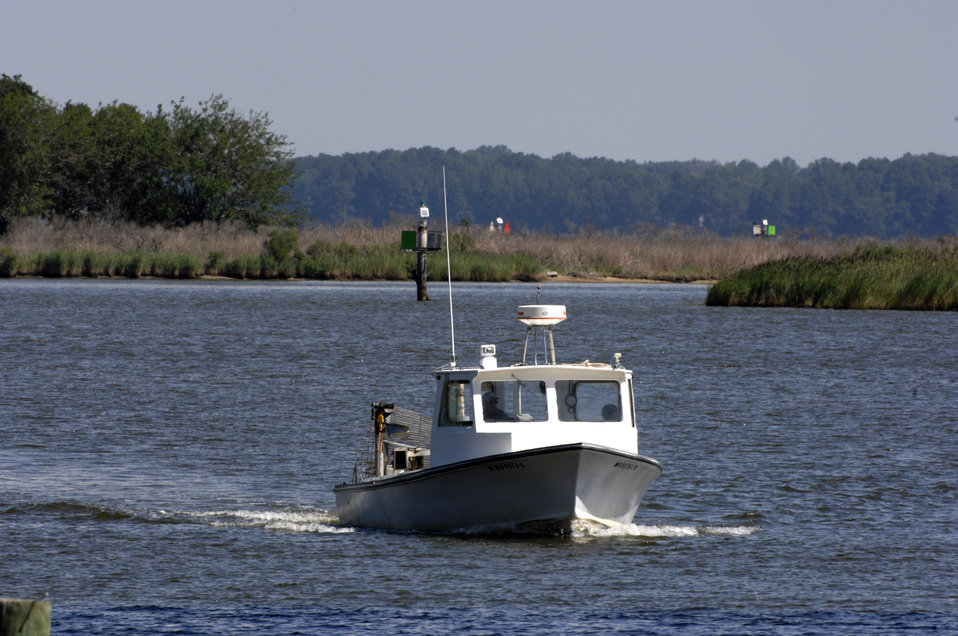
The heavy use of commercial and pleasure boats are two of the many stresses to the Chesapeake Bay Watershed in Grasonville, Kent Narrows, Maryland on August 10, 2008.